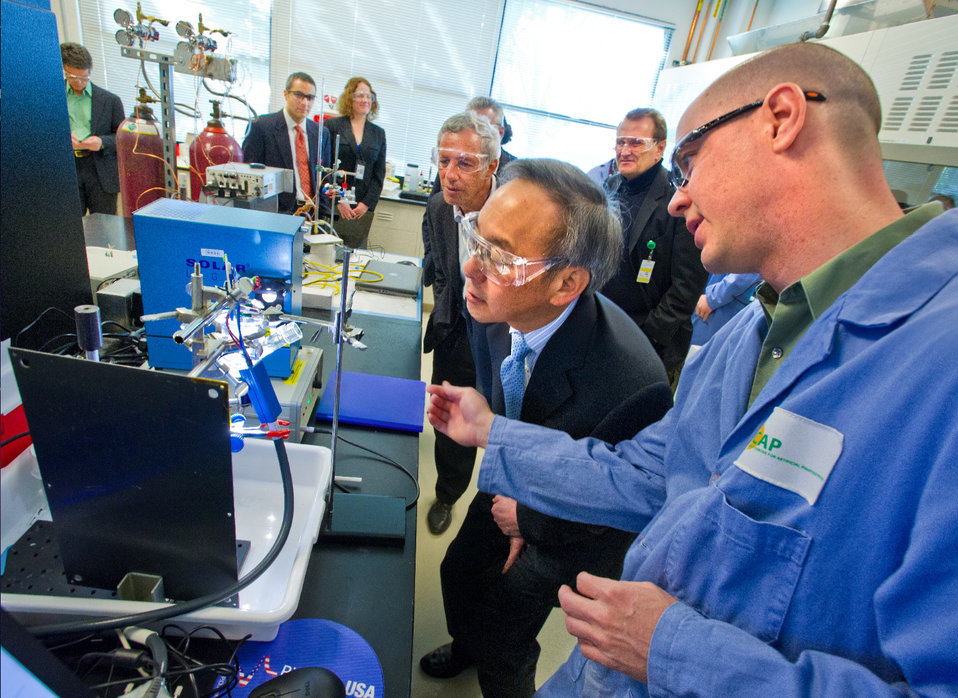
Secretary Chu Visits Joint Center for Artificial Photosynthesis

U.S. Department of Energy Secretary Steve Chu recently visited the Joint Center for Artificial Photosynthesis (JCAP)-North, a DOE Energy Innovation Hub aimed at developing the technology to commercially generate fuels directly from sunlight. JCAP is operated as a partnership between the California Institute of Technology and Berkeley Lab. While there, Secretary Chu saw demonstrations of a fast prototyping 3-D printer and a photochemistry water-splitting experiment.